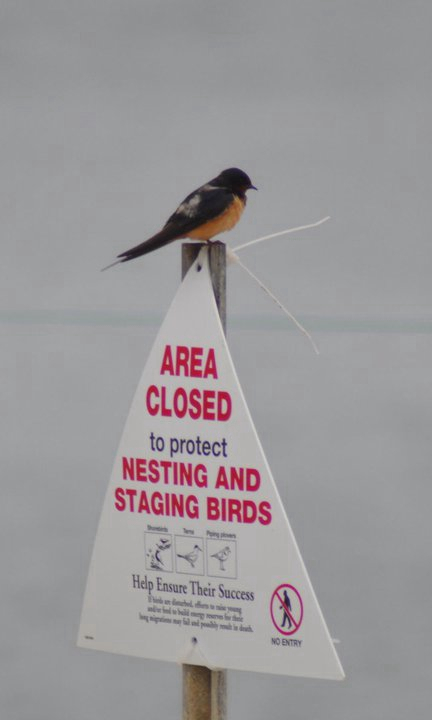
barn swallow on sign

Nantucket National Wildlife Refuge